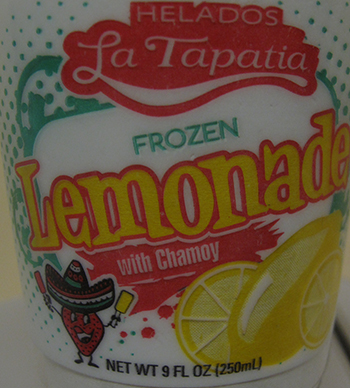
RECALLED – Ice cream products

March 19, 2014 – Product Recall – Helados La Tapatia, Inc. Recalls Products Because of Possible Health Risk.